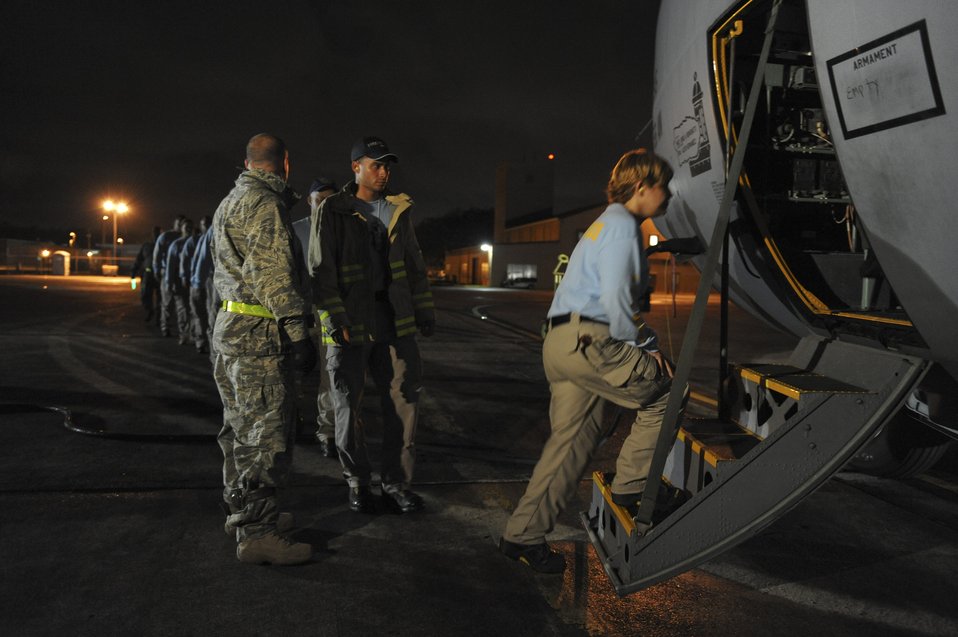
haiti night mission

Airmen from the Puerto Rico Air National Guard’s 156th Airlift Wing escort Puerto Rican aid relief workers aboard a C-130E Hercules aircraft Jan. 16, 2010, to support the relief effort in Haiti in the aftermath of a devastating earthquake.